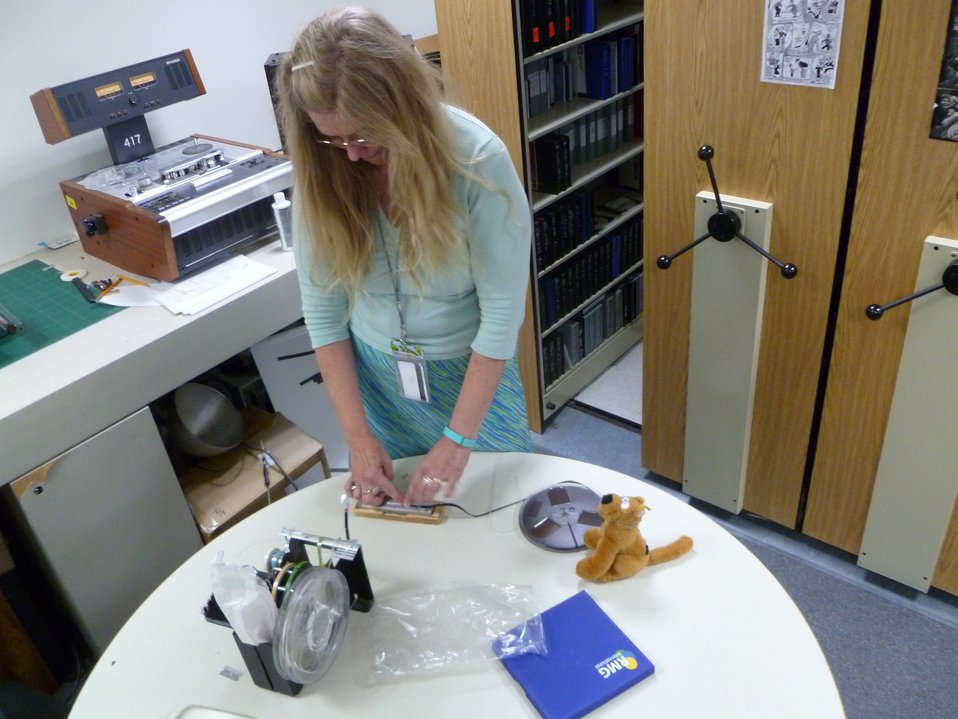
Audiovisual archivist Maryrose Grossman (and Scooby) splice tape in the AV Archives Research Room at the JFK Library.; Location: John F. Kennedy Presidential Library, Boston, MA